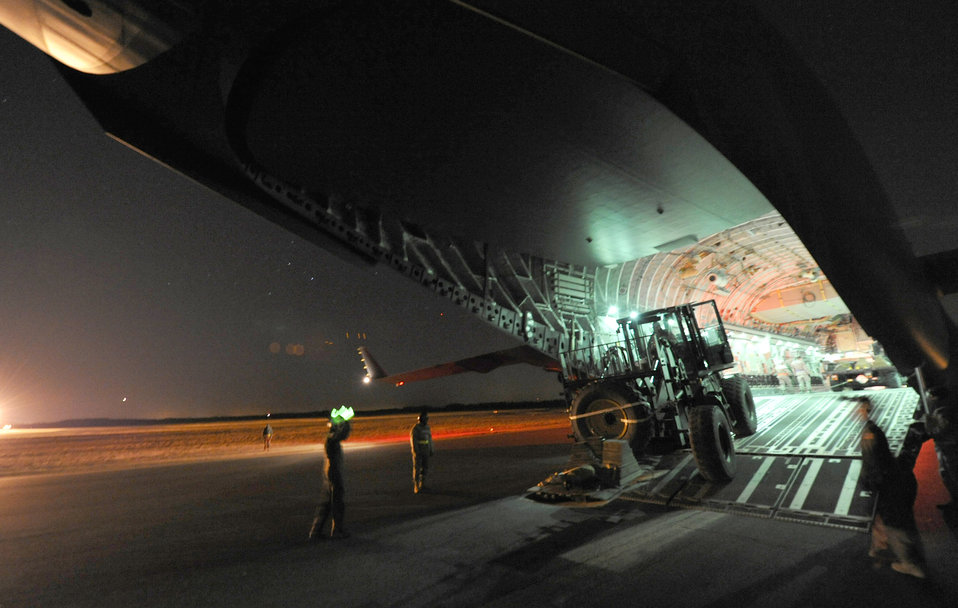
Field training exercise

An aerial porter from the 621st Contingency Response Wing drives an articulated forklift from a C-17 Globemaster III during a nighttime engine-running offload Feb. 23, 2011, at Joint Base McGuire-Dix-Lakehurst, N.J.